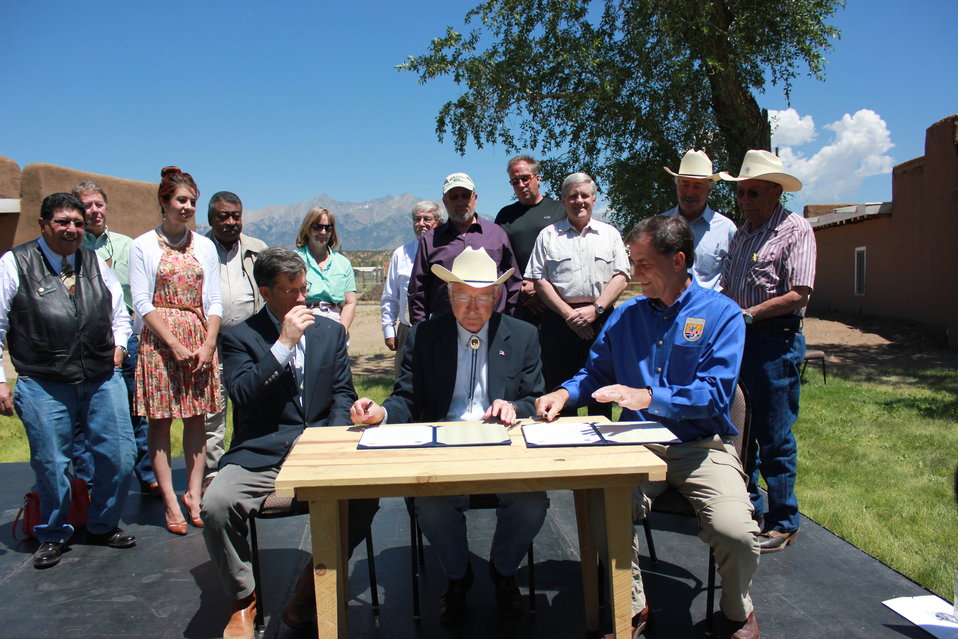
Historic Conservation Easement in Sangre de Cristo Mountains